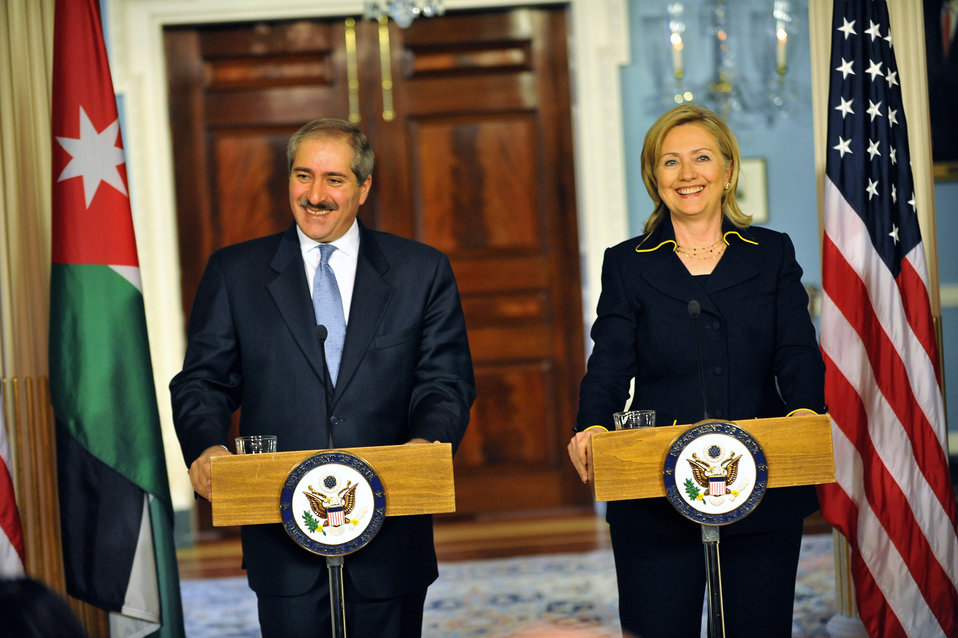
Secretary Clinton and Jordanian Foreign Minister Judeh Deliver Remarks

U.S. Secretary of State Hillary Rodham Clinton and Jordanian Foreign Minister Nasser Judeh deliver remarks in a joint press conference at the U.S. Department of State in Washington, D.C., on January 26, 2011.